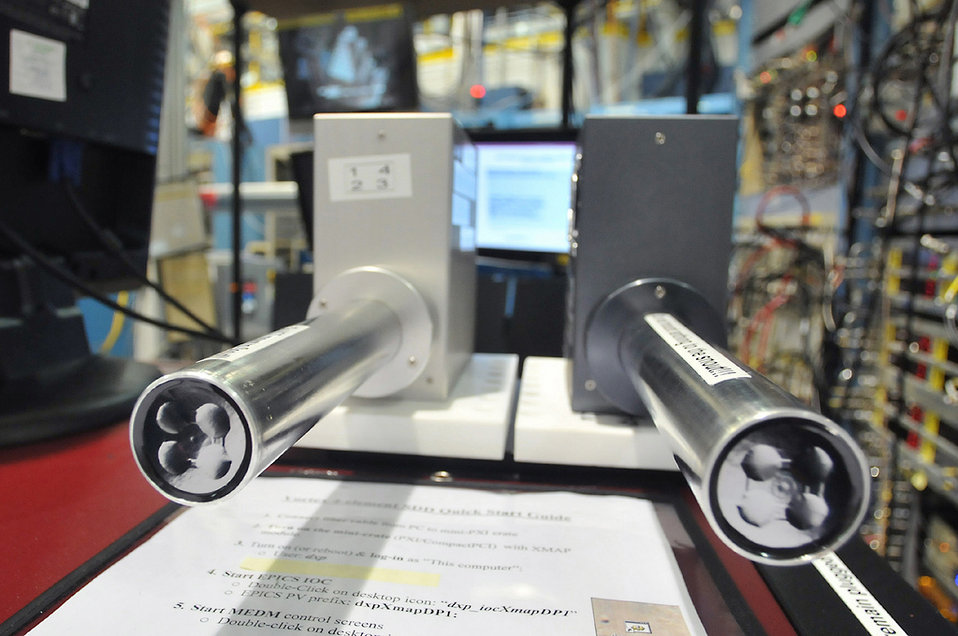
The Vortex ME-4multichannel spectrometer features four of the largest active area single elements detector (~50mm2) available of its kind in a single compact package. The Vortex ME-4 is used for a wide variety of x-ray fluorescence ( XFR) experiments at the Advanced Photon Source. It has excellent energy resolution (1Mcps). At a very short peaking time of 0.25 us, an output count rate of 600kcps is archived.